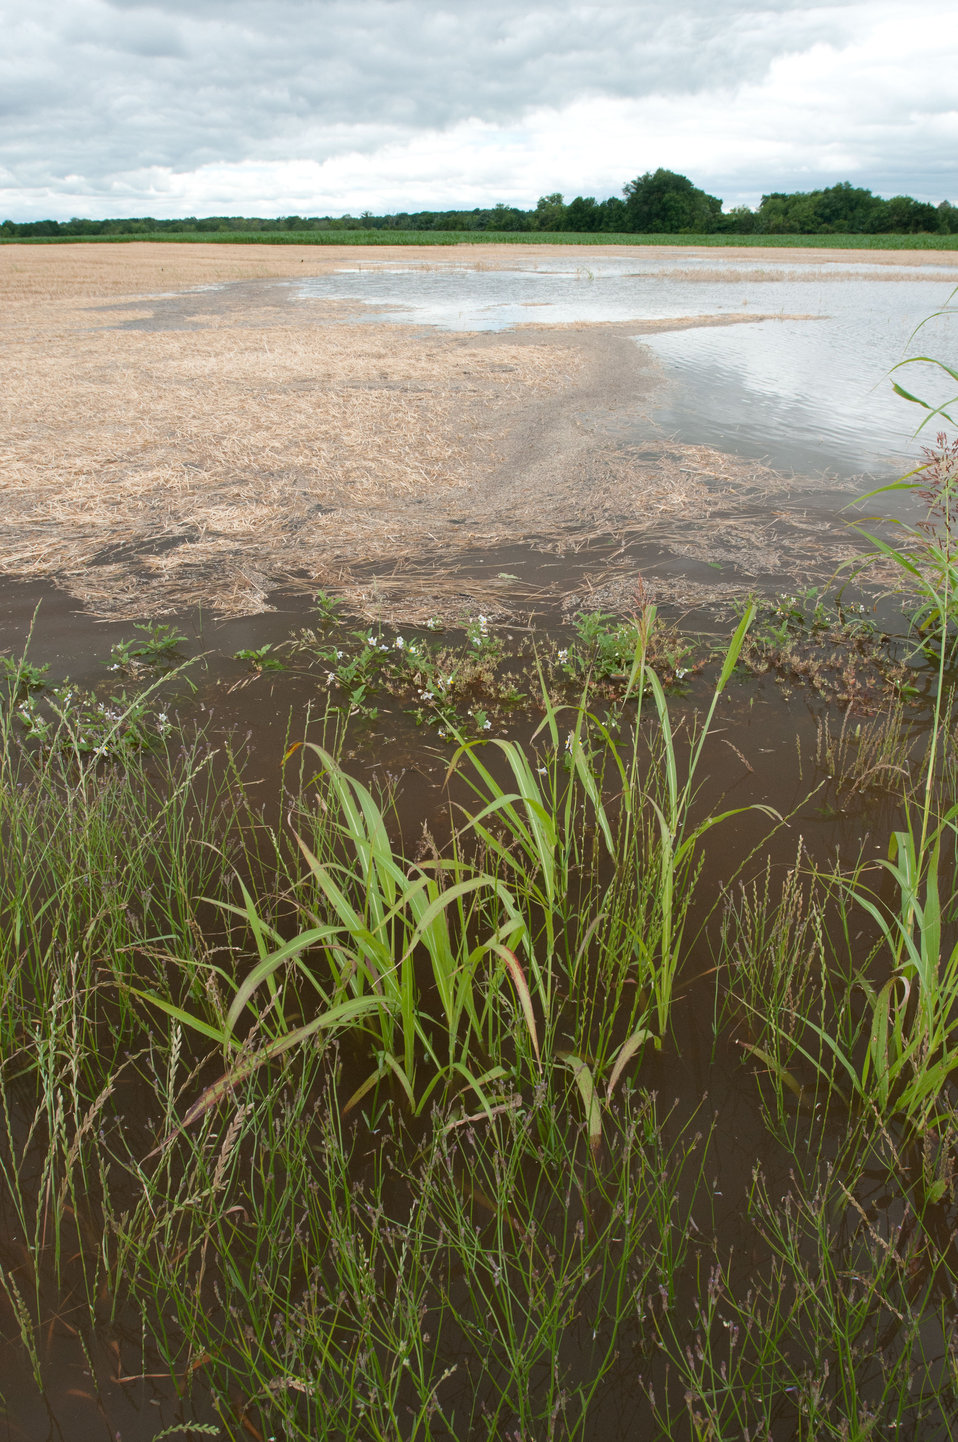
To save crops that threatened by Mississippi River floodwaters farmers harvested wheat two weeks early from the Yazoo River area of MS near Yazoo City, MS, on Monday, May 16. 2011.